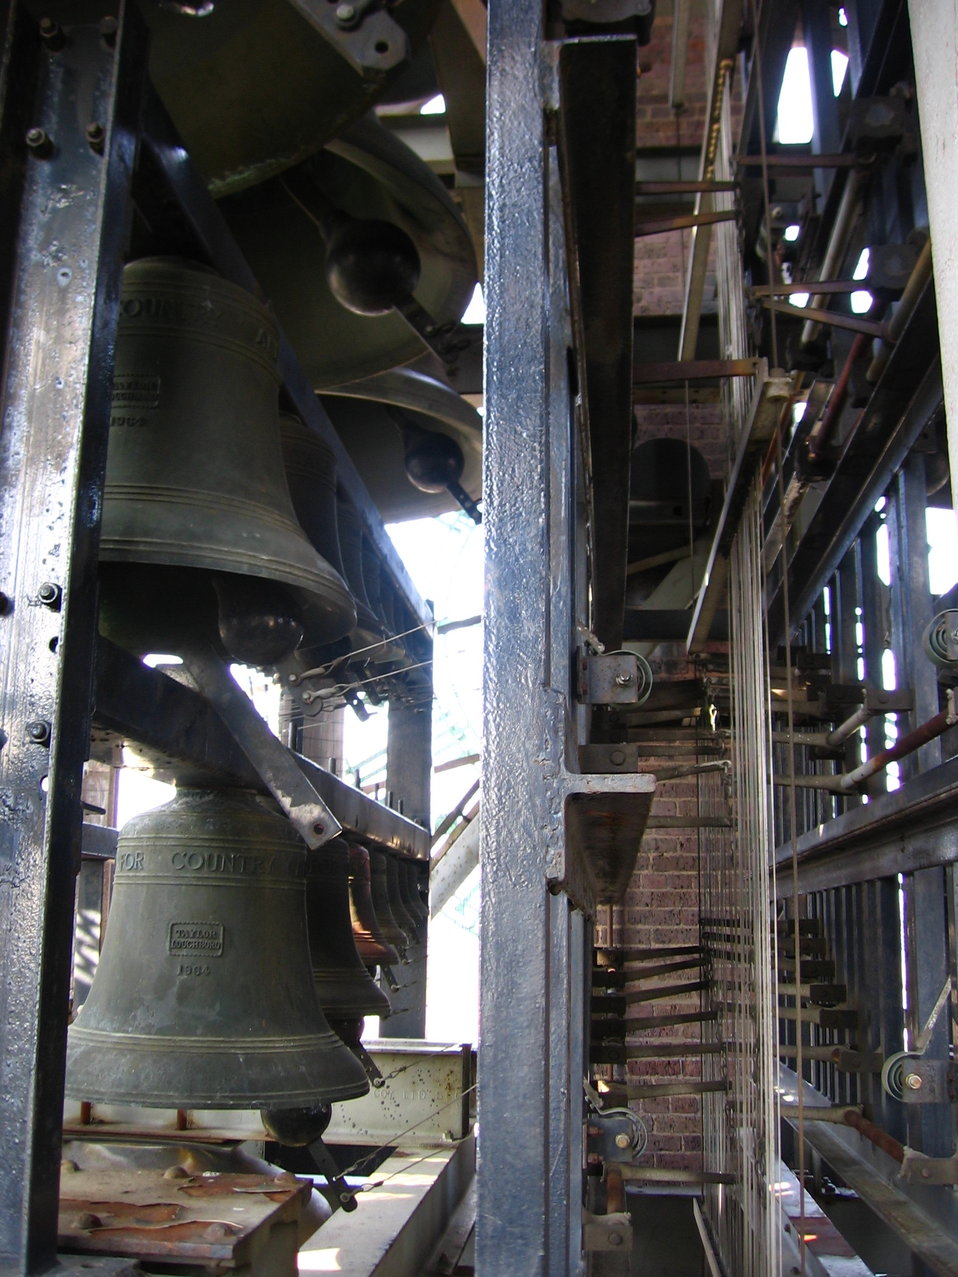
The bells of the Yale Memorial Carillon. Wires connect the clappers to the console below.